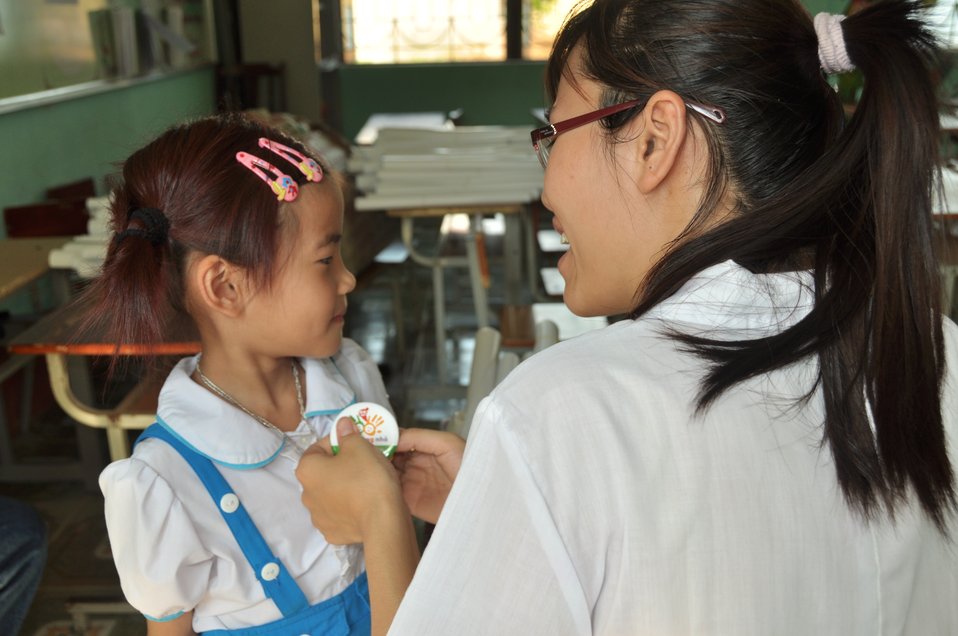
USAID supports deworming education and medication distribution in Bac Giang Province